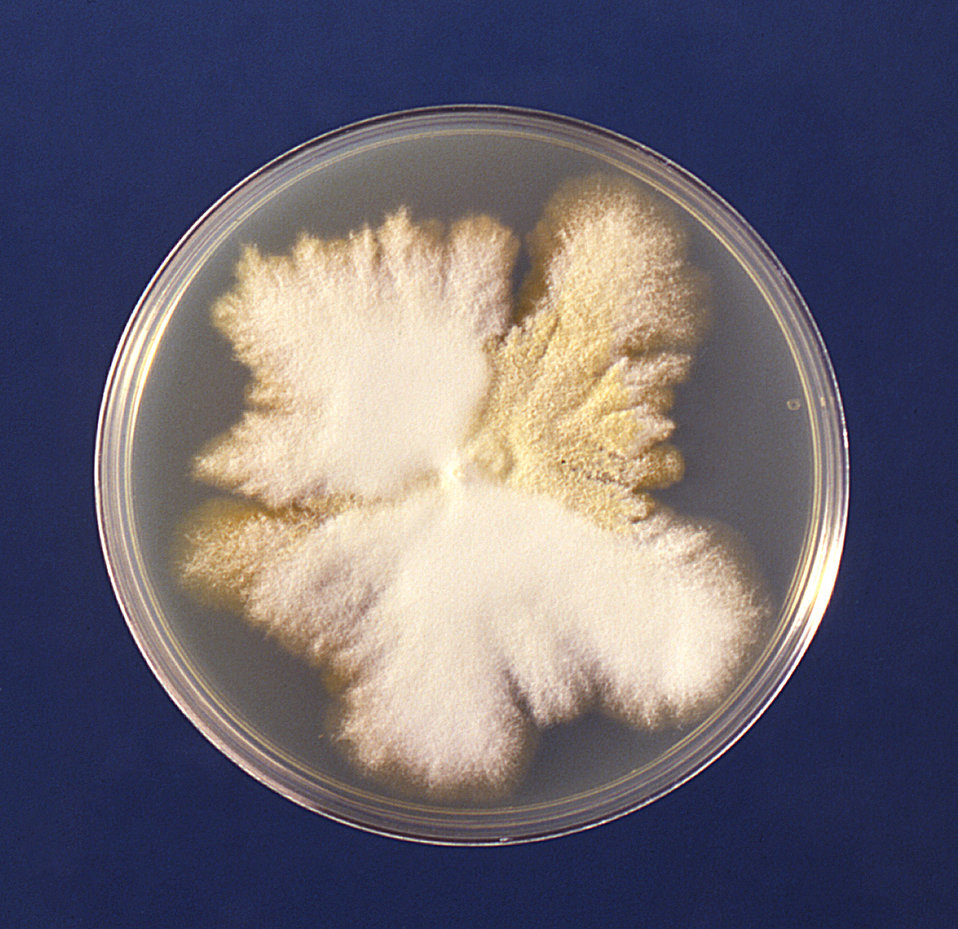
This image is a plate culture of the fungus Trichophyton mariatii.